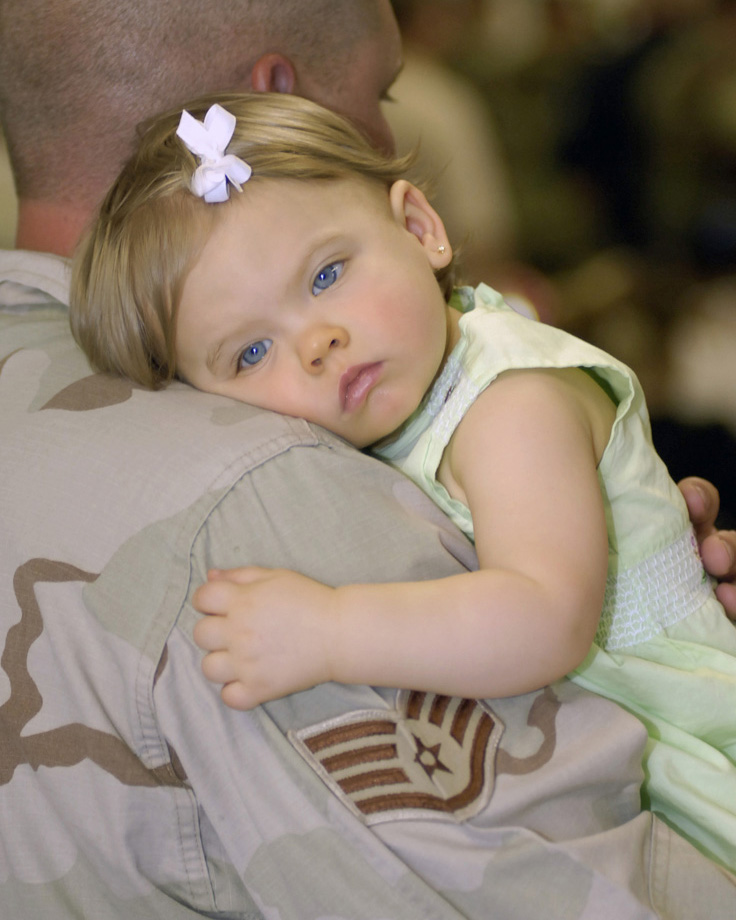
In Dad's arms

Staff Sgt. Ryan Hall holds his daughter on Monday, April 3, 2006, after returning to Charleston Air Force Base, S.C., from a six-month deployment to Camp Bucca, Iraq. Sergeant Hall is with the 437th Security Forces Squadron.